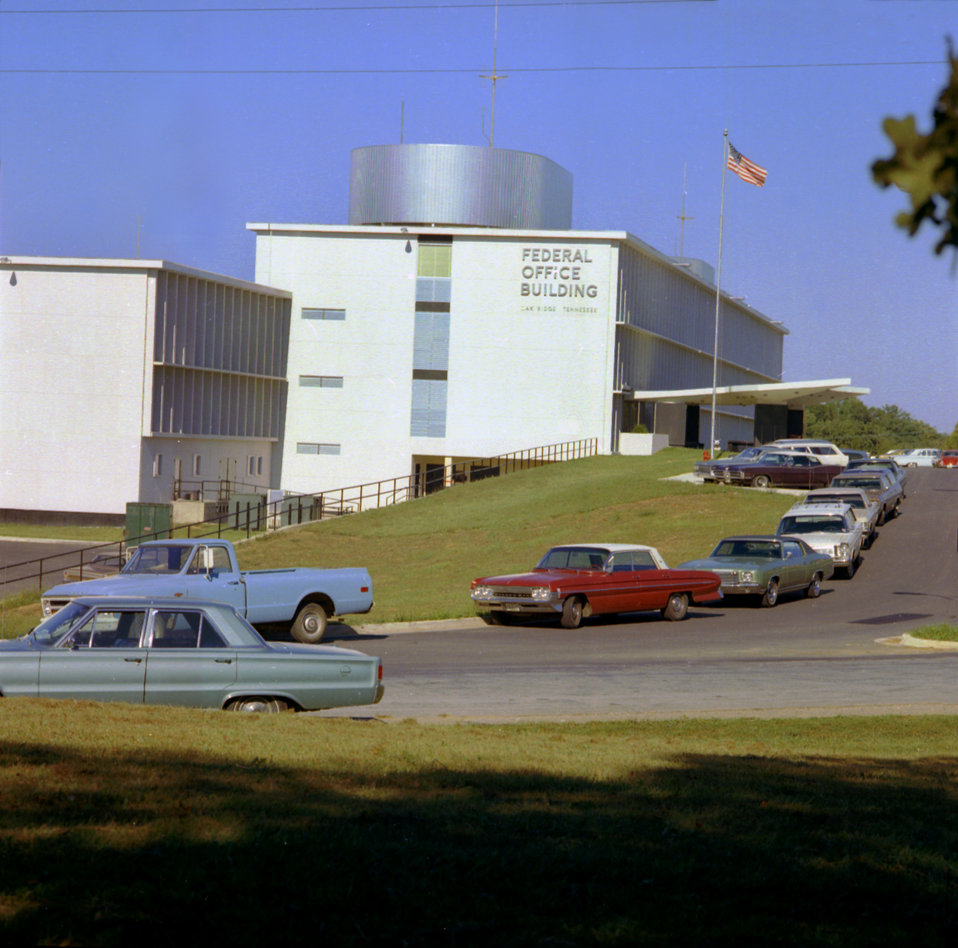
New Federal Office Building Oak Ridge

760-264c DOE photo by Frank Hoffman
New Federal Office Building Oak Ridge Sept. 1970